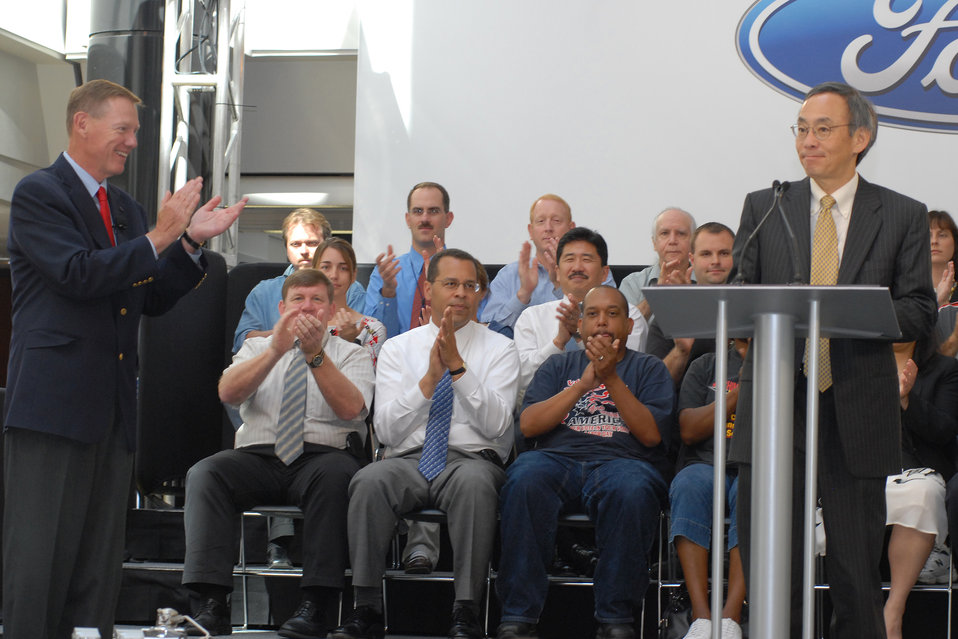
Dearborn Mi., 6-23-09. Today, U.S. Department of Energy Secretary Steven Chu announced that Ford has been approved for the Advanced Technology Vehicles Manufacturing Incentive Program. The loan commitment announced is $5.9 billion. Shown here is Alan Mulally, President and CEO, Ford motor Company, applauding U.S. Department of Energy Secretary, Steven Chu.